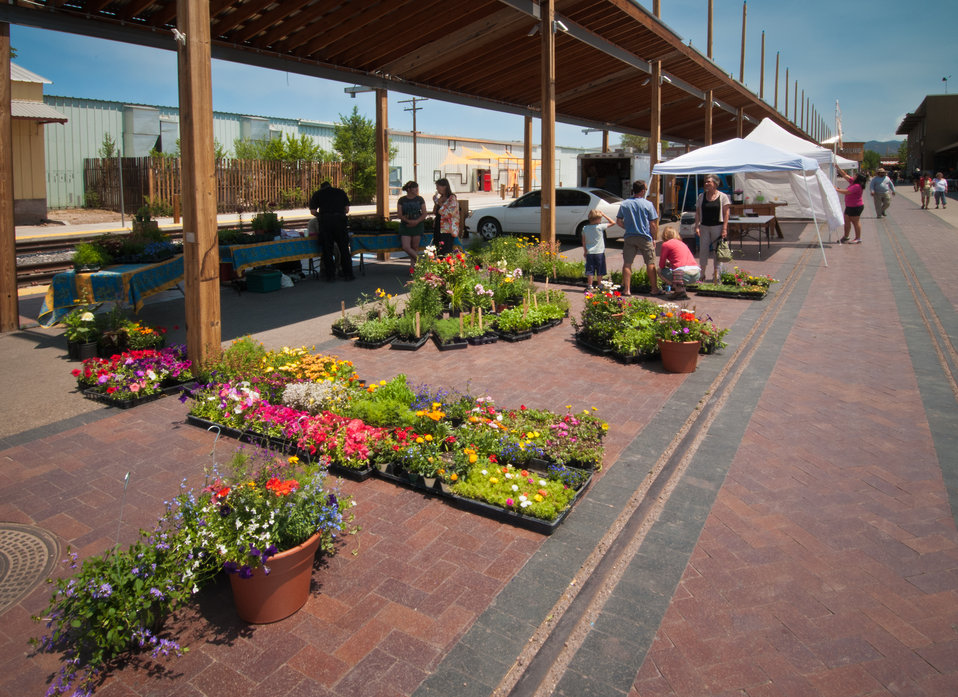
The Santa Fe Farmers Market is one of the oldest, largest and most successful growers’ markets in the country. Serving more than 150 farmers and producers in 15 Northern New Mexico counties, the market brings fresh food; education promotes small farms and sustainable agriculture in Northern New Mexico. The Market began with a handful of farmers in the late 1960’s and represents over 100 active vendors and features hundreds of different agricultural products. The Santa Fe Farmers Market assures 100% percent of the vegetables, fruits, and nursery plants available at the market are locally grown by the people selling them.